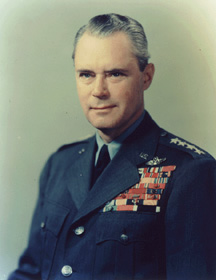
Gen. Hoyt S. Vandenberg was the second chief of staff of the U.S. Air Force and the first leader of the Air Force during the Cold War.